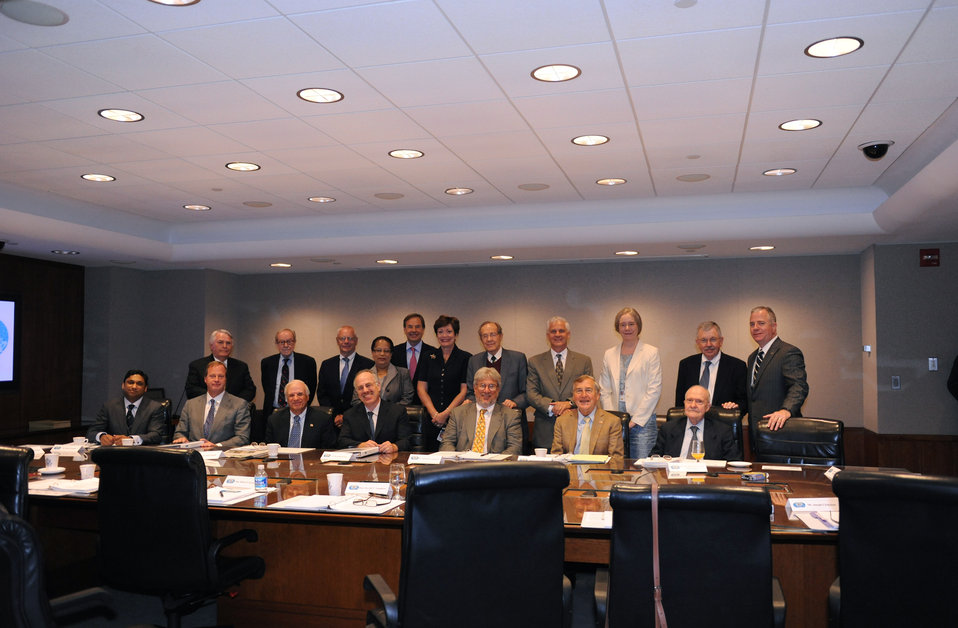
Under Secretary Tauscher Meets With International Security Advisory Board

Under Secretary of State for Arms Control and International Security Ellen Tauscher meets with the International Security Advisory Board at the Department of State in Washington, D.C., July 12, 2011.